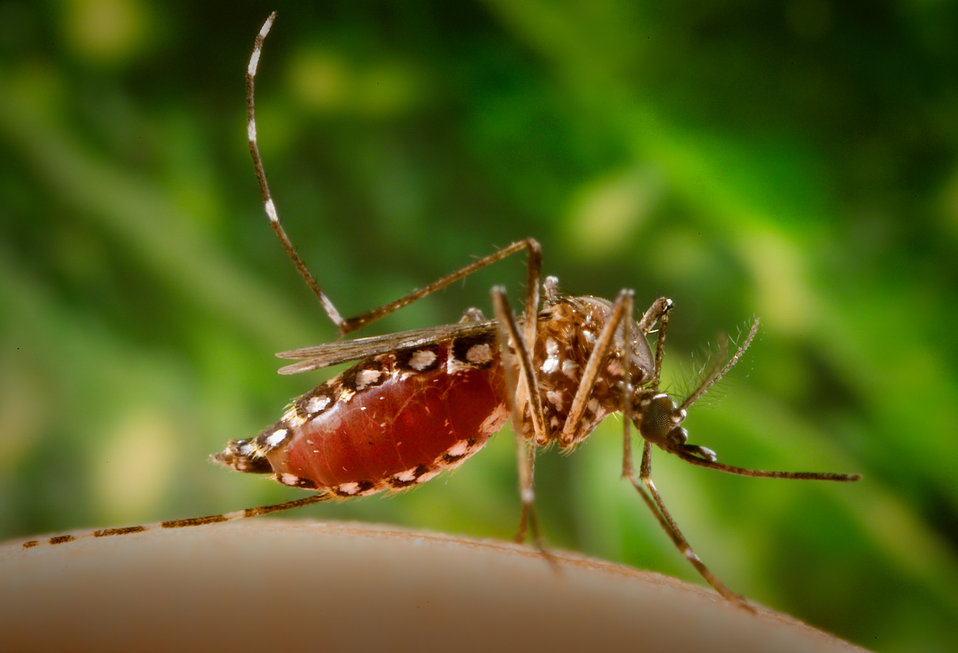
Having finished the ingestion of her blood meal, this 2006 photograph depicted a female Aedes aegypti mosquito as she was in the process of flying from its human host. See PHIL# 8923 - 8933, depicted her in various feeding phases. Normally, this female would be obtaining her blood from an unsuspecting host, but in this case, the CDC's biomedical photographer, James Gathany, had volunteered his own hand in order to entice the insect to alight, and feed. Note that her abdomen had become distended due to the fact that her stomach now filled with her blood meal, and how the proboscis' labial sheath was now pulled up, pointing forward, while no longer was the fascicle inserted in the host's skin.